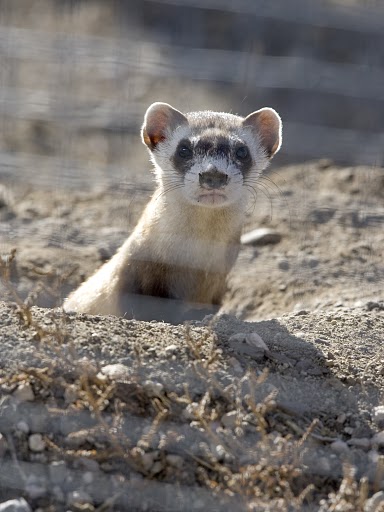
National Black-footed Ferret Conservation Center